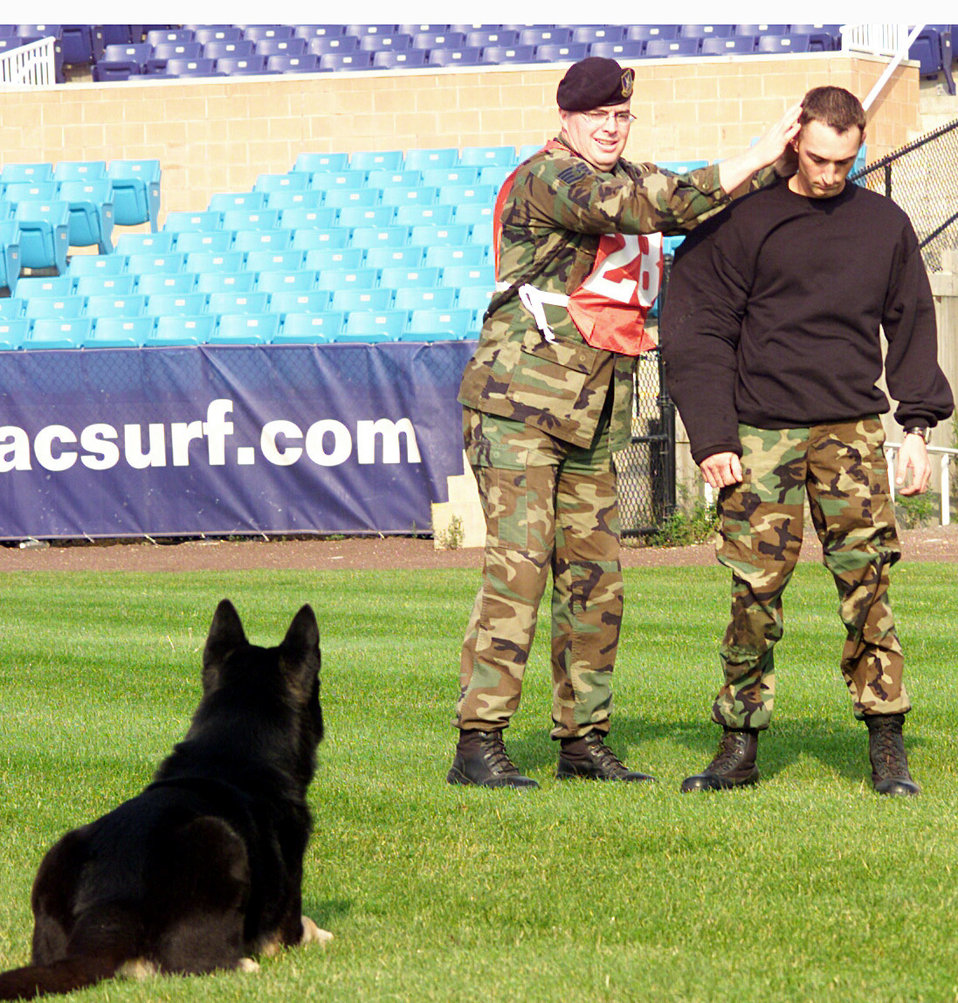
Attack!

ATLANTIC CITY, N.J. -- Brian, a military working dog, guards at the heeled position as his handler, Staff Sgt. Jeremiah Jessen, searches Staff Sgt. Justin Marshall during the criminal apprehension event at the U.S. Police Canine National Field Trials here. The team was the only military team to qualify for the national tournament, where they competed against 126 civilian K-9 police teams and finished in fourth place. The team is part of the 28th Security Forces Squadron military working dog section at Ellsworth Air Force Base, S.D.